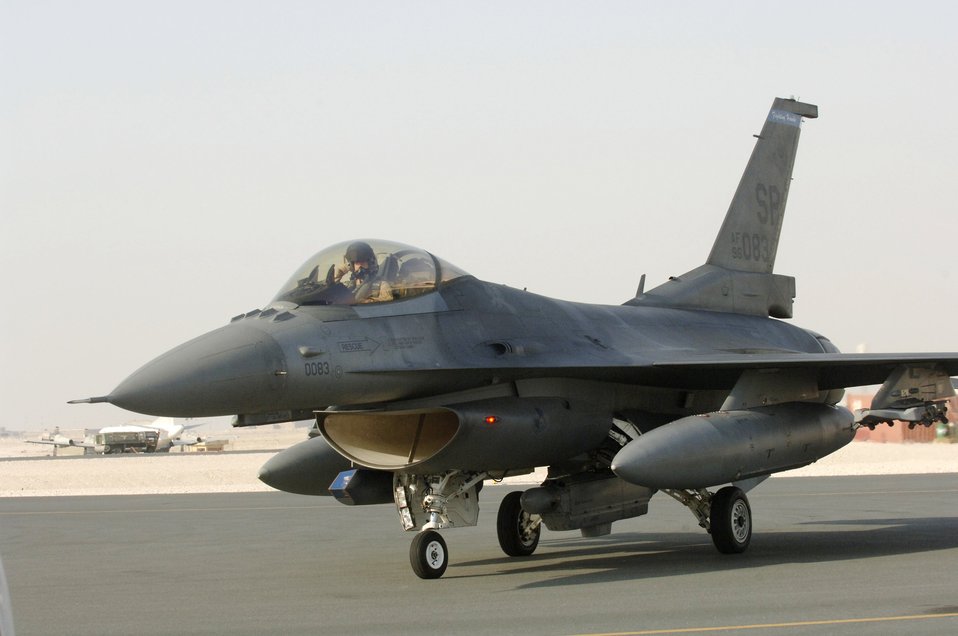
Airpower summary for May 9, 2007

An Air Force F-16 Fighting Falcon returns from a mission in Southwest Asia. F-16s provided overwatch during a successful raid near Baghdad May 10.